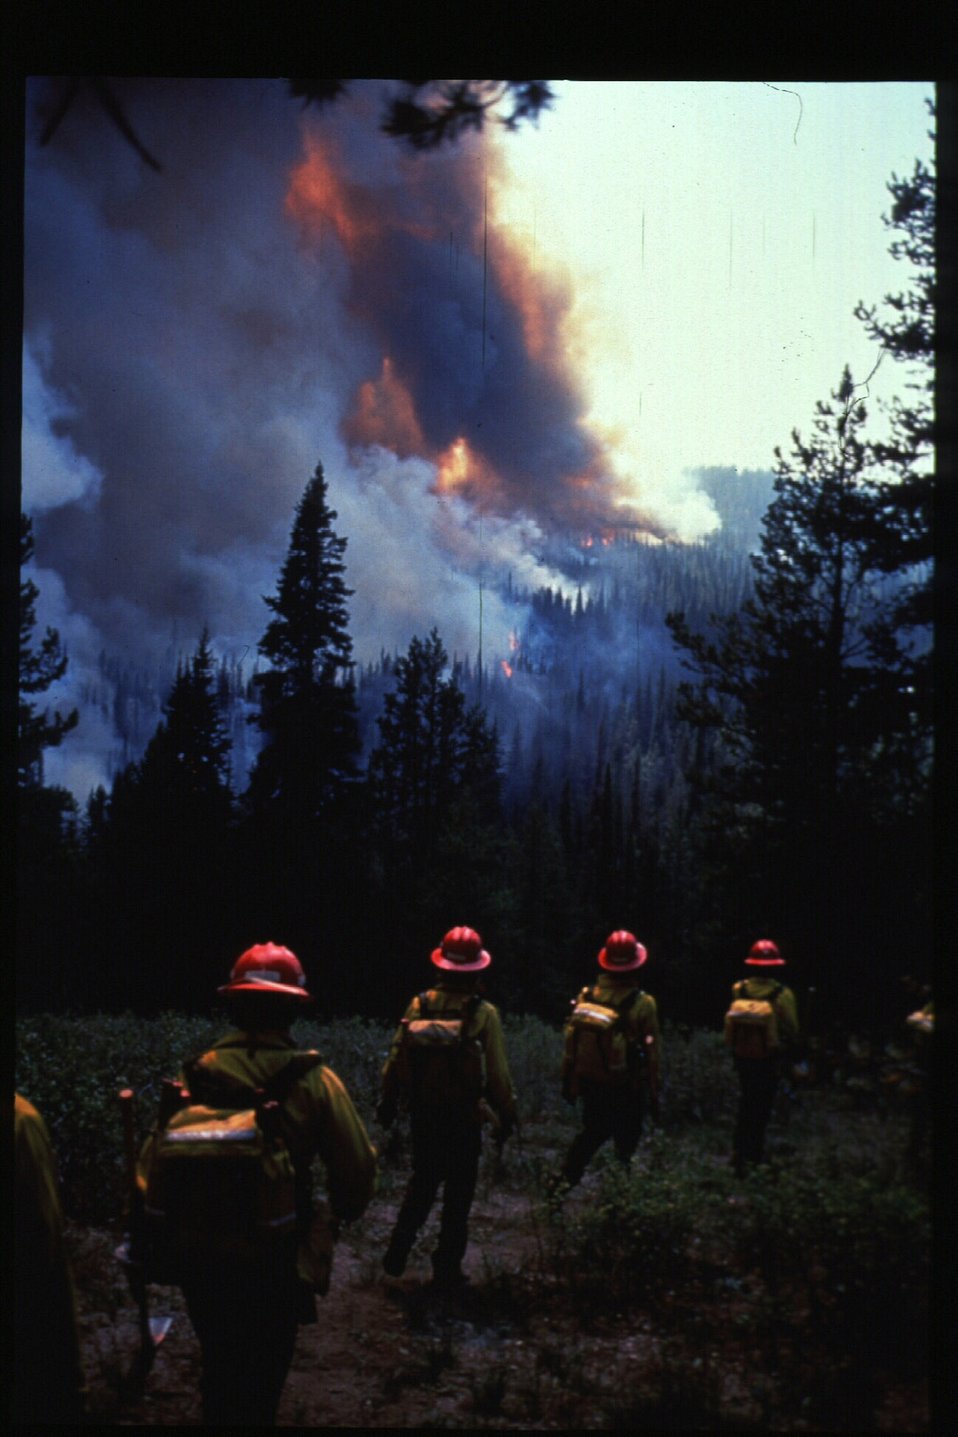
Boise Foothills Fire Danskin Mountains and South Fork of Boise River Wild Fire Fighters Four River Field Office LSRD Lower Snake River District